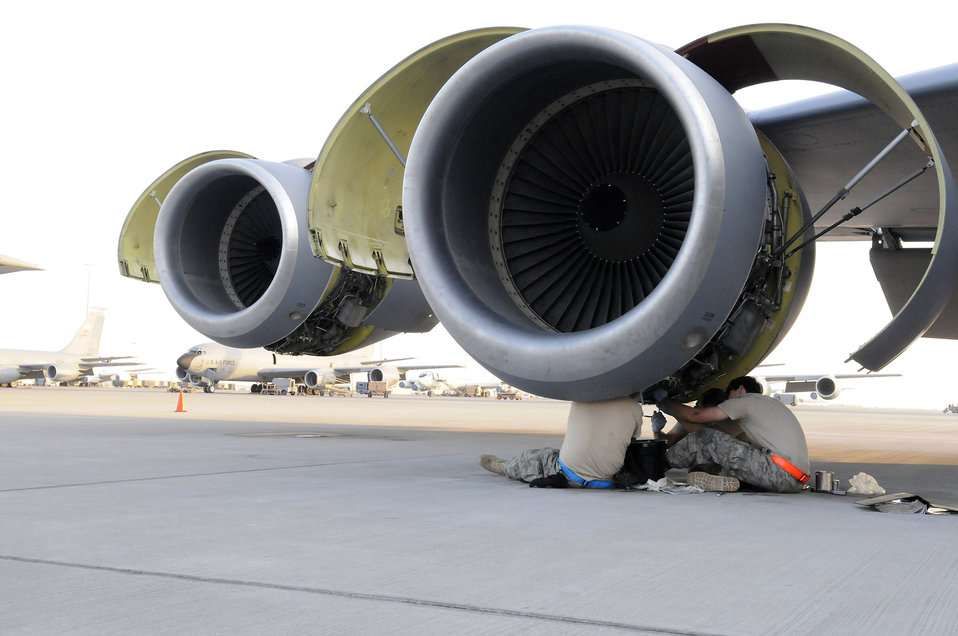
Engine tune up

Staff Sgt. Eric Mutschlechner performs a 60-hour inspection as Staff Sgt. Anthony Hernandez and Airman 1st Class Alexander Lesch perform a 120-hour inspection on a KC-135 Stratotanker engine Nov. 20 at an air base in Southwest Asia. KC-135s provide the core aerial refueling capability for the Air Force and support to Navy, Marine Corps and allied nation aircraft in the U.S. Central Command area of responsibility. Sergeant Mutschlechner is a native of San Marcos, Texas, and is deployed from MacDill Air Force Base, Fla. Sergeant Hernandez hails from Barstow, Calif., and is deployed from McConnell AFB, Kan. Airman Lesch is from Burlington, Wis., and deployed from Grand Forks AFB, N.D. All three are assigned to the 379th Expeditionary Aircraft Maintenance Squadron.